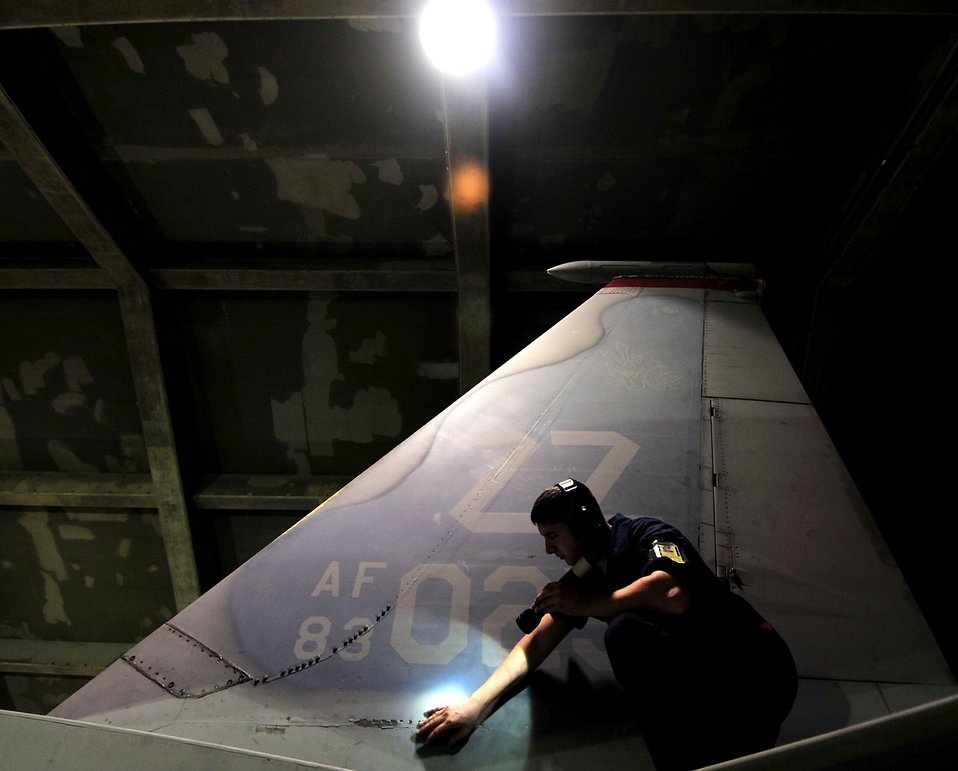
Shining more light

Airman 1st Class David Eckert conducts his pre-flight checks on an F-15 Eagle during an exercise March 23, 2010, at Kadena Air Base, Japan. He is a technical aviation mechanic with the 18th Aircraft Maintenance Squadron.